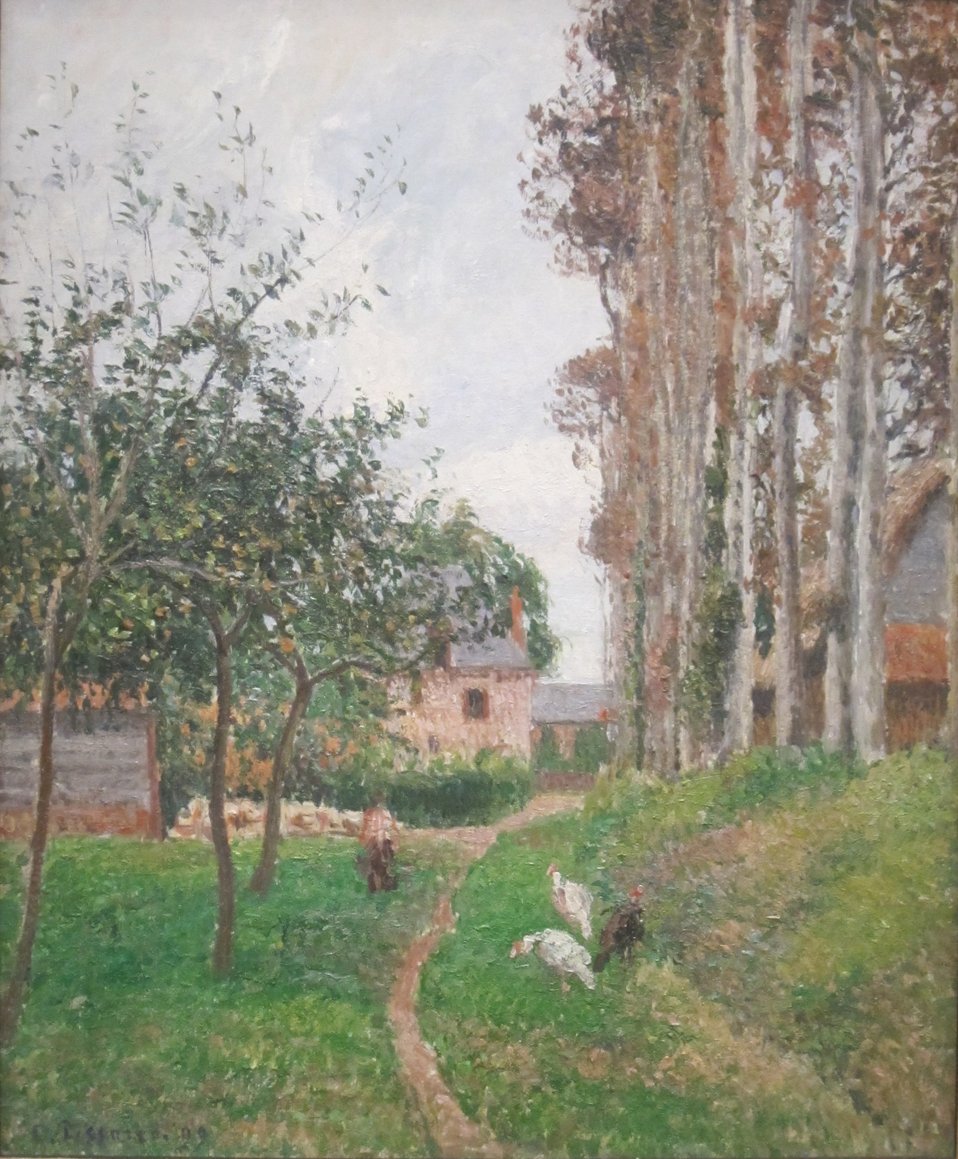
'Gray Day, Varengeville, Auberge du Manoir' by Camille Pissarro, Cincinnati